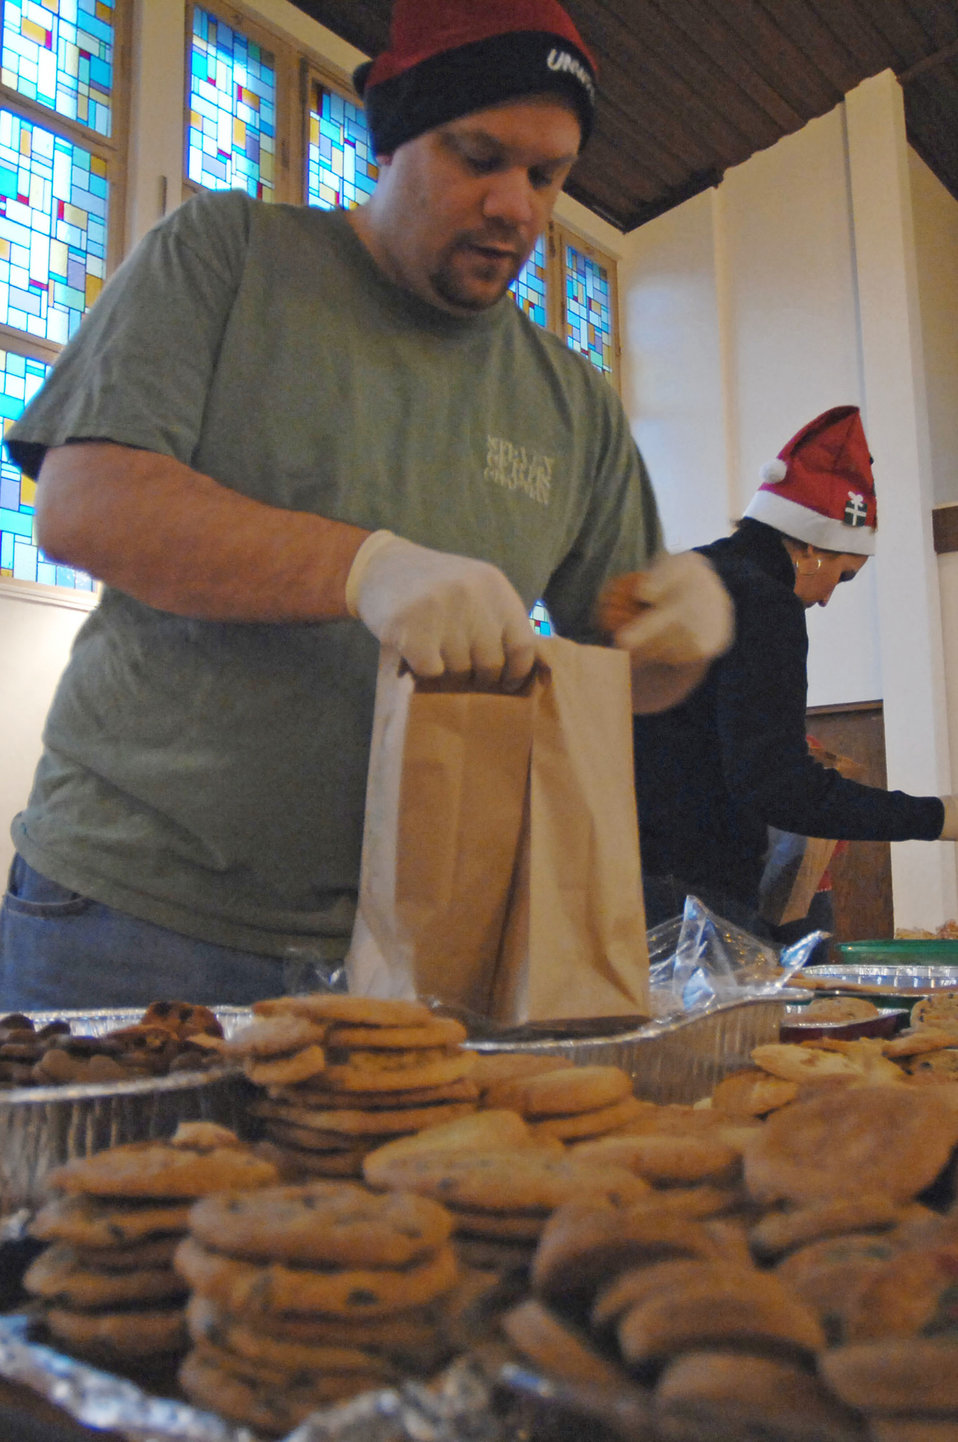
ROSC Cookie Drive

Ramstein Officer Spouses Club member Mike Clark fills bags with cookies destined for single servicemembers living in the dormitories on Vogelweh and Ramstein Air Base, Dec. 10, 2009. The Ramstein Officer Spouses Club together with the Kaiserslautern Spouses Association and the Ramstein Enlisted Spouses Association collected more than 12,000 cookies to give to the more than 11,000 Airman who live in the dorms at the bases.